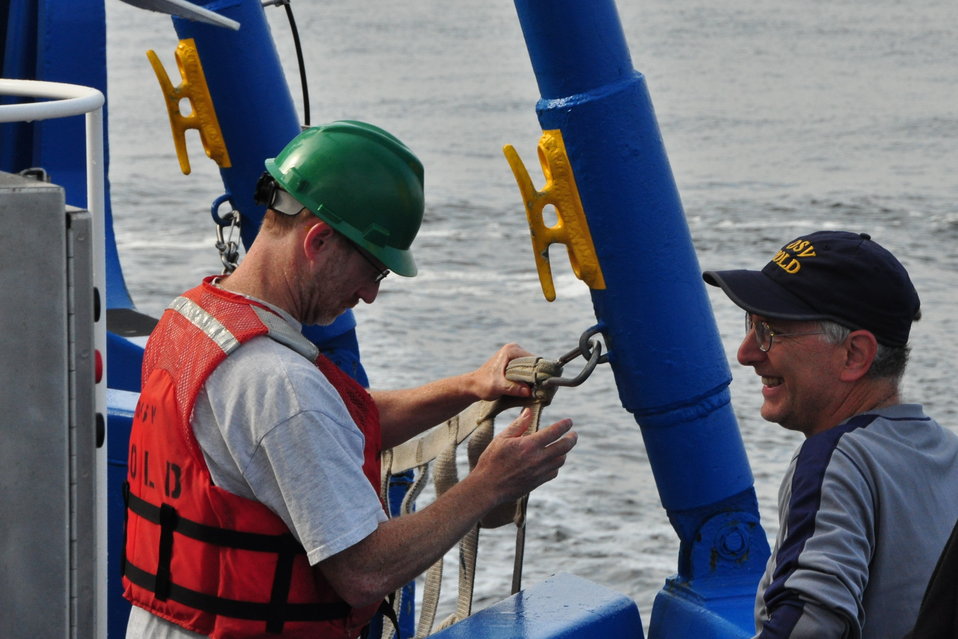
August 2009, EPA scientists happy with the success so far

At this point the survey was ahead of schedule. Our four teams of scientists were so expeditious at each of the targetted stations that we had time to turn and head further off shore to collect additional samples and plankton from an area known as Jeffreys Ledge. This was the furthest offshore we were headed and we were hoping to catch sight of some whales! In this photo, David Turin, Matt Liebman, U.S. EPA.